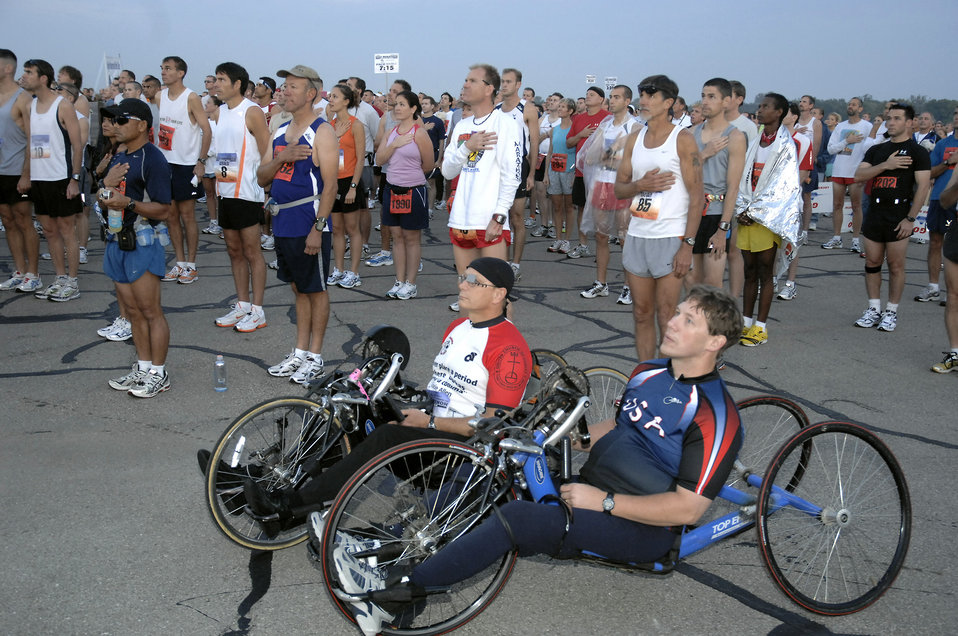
Disabilities don't stop marathoners

Runners and wheel marathoners honor the playing of the national anthem and arrival of the American flag via a parachutist during the Air Force Marathon opening ceremonies Sept. 20 at Wright-Patterson Air Force Base, Ohio.